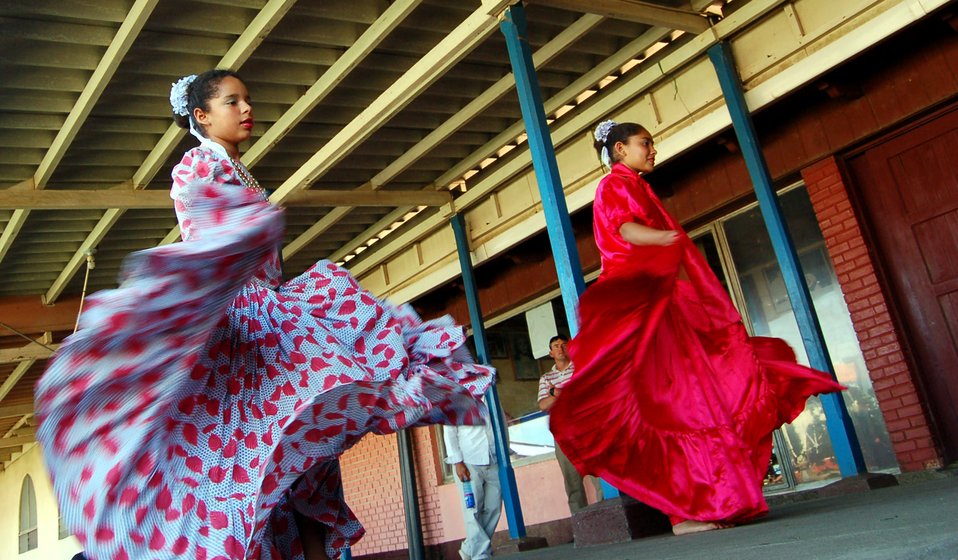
Airmen visit Nicaraguan orphanages, deliver donations

Maria Concepcion Cruz and Marjorie Elizabeth Torres dance for Camp RED HORSE members April 7 at the Siervas del Divino Rostro orphanage in Santa Teresa, Nicaragua. Camp RED HORSE members collected and donated more than $500, more than 80 books and more than 100 toys to two orphanages in Santa Teresa for the Easter holiday. They also put on Easter eggs hunts and spent the day playing games with the children.